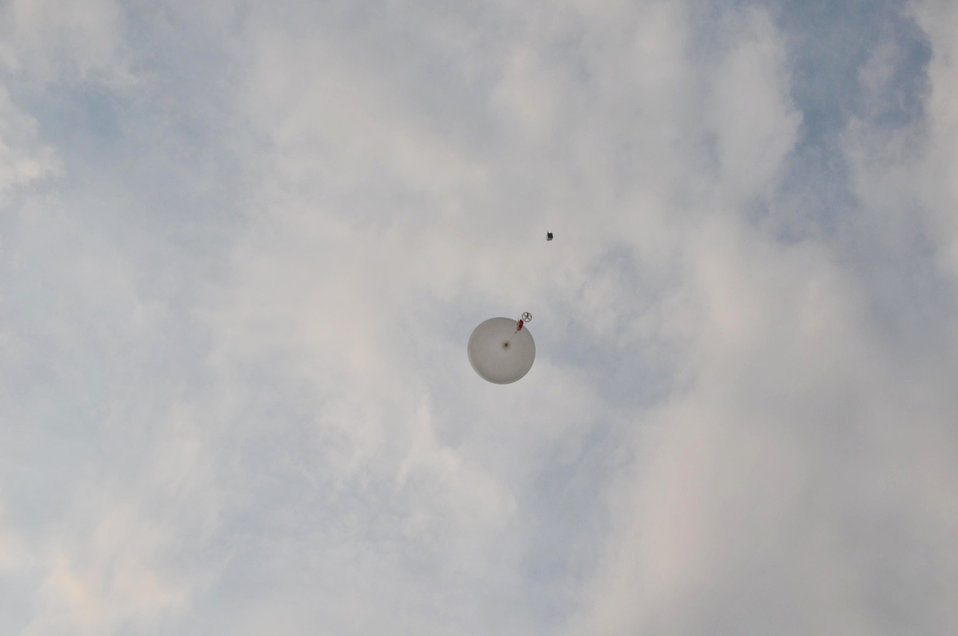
A Weather Balloon is launched to a height of 60,000 feet record weather data. Below the balloon is the parachute that returns the balloon safely back to the ground and beneath the parachute is the 3 lb. payload package w/weather instruments, transmitter and GPS. The instruments will measure the air instability around the Gold Pan Fire. The Gold Pan Fire in the Bitterroot National Forest near Conner, MT began by lightning on Jul. 16, 2013 by lighting have consumed approximately 17,163 acres.